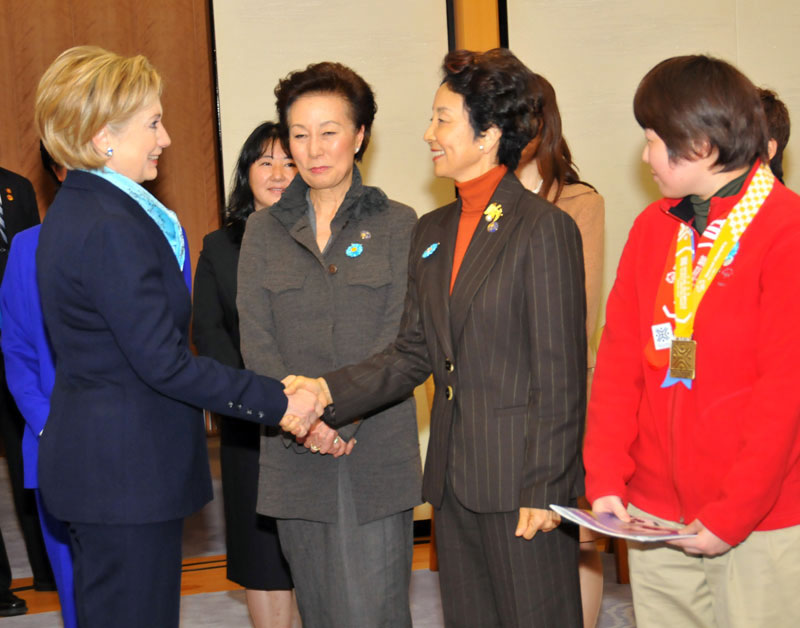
Secretary Clinton With Honorary Chairperson of the Japan Special Olympics Committee

U.S. Secretary of State Hillary Clinton shakes hands with Kayoko Hosokawa, Honorary Chairperson of the Japan Special Olympics Committee, while Chairperson Yoshiko Mitsui looks on, during an arrival ceremony at Tokyo's Haneda Airport on February 16, 2009.